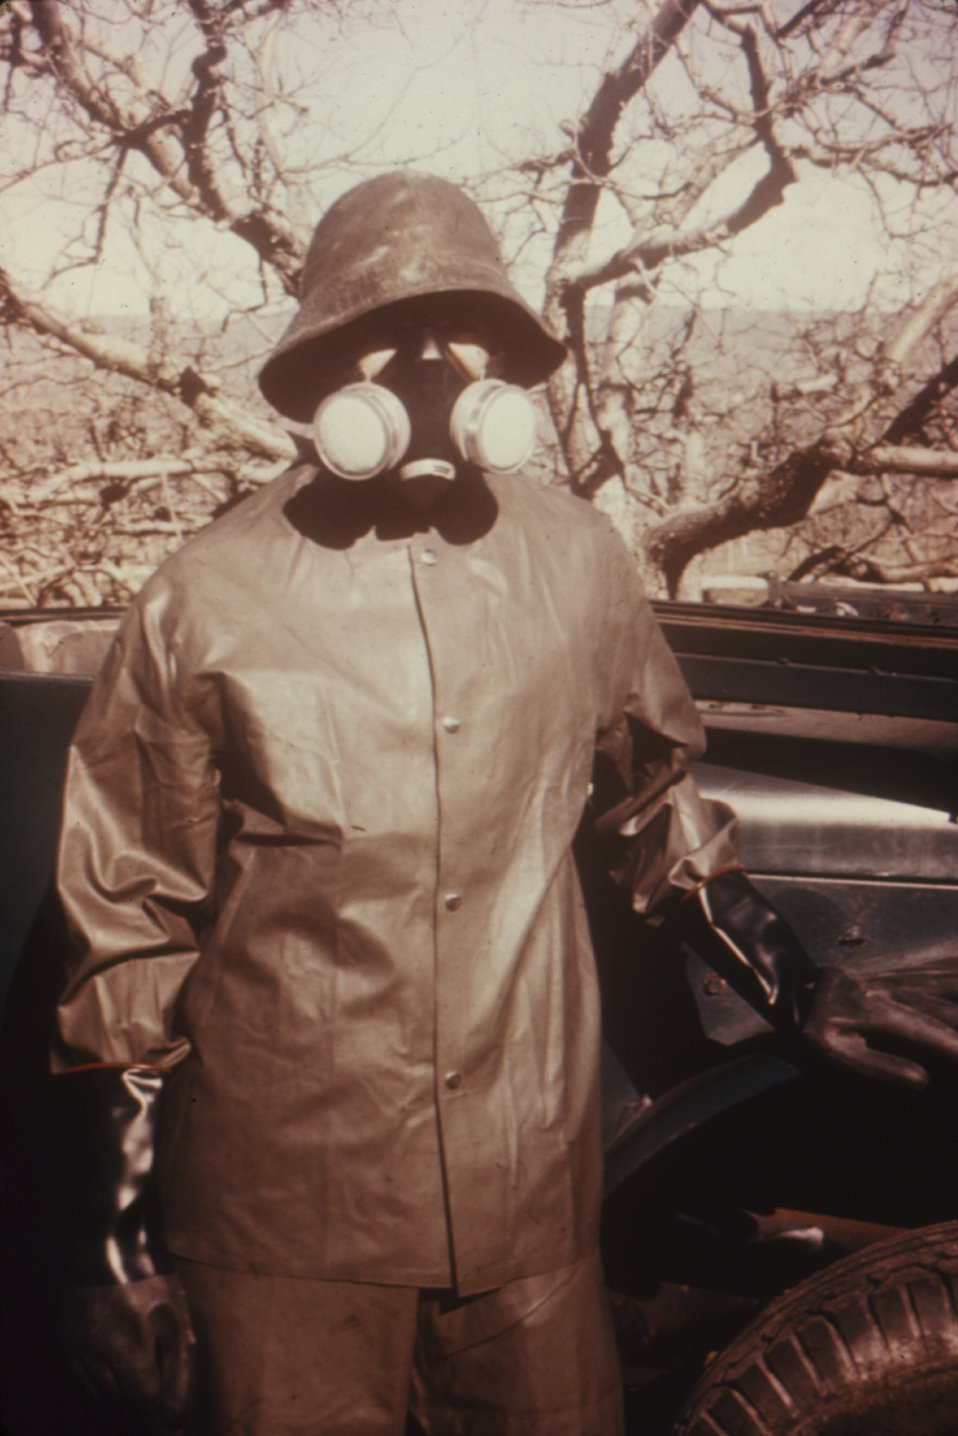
This individual was demonstrating the types of protective clothing worn by pesticide workers during the 1970's.